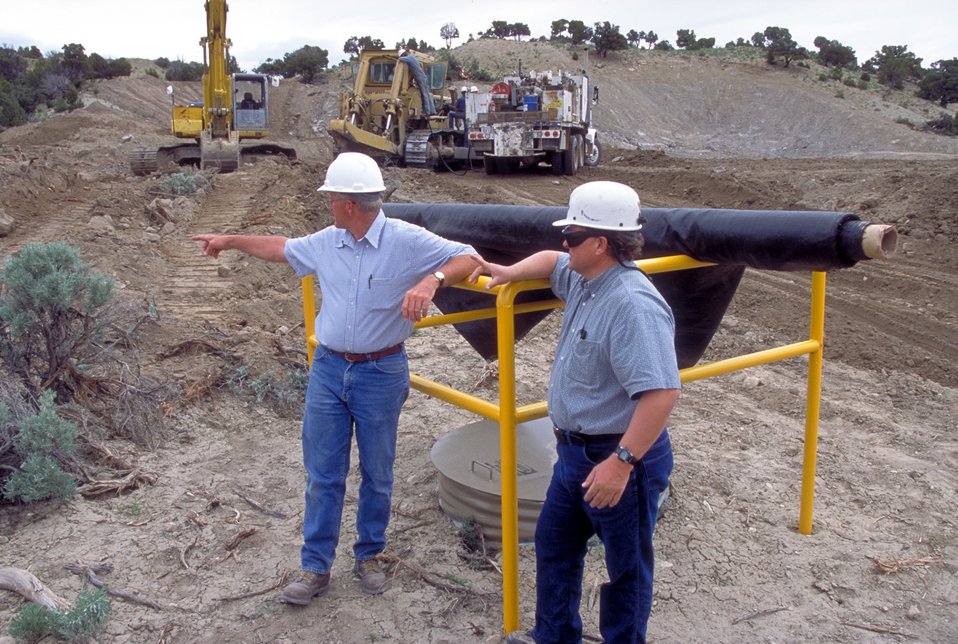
Building a drill pad for coal bed methane production near price, Utah.